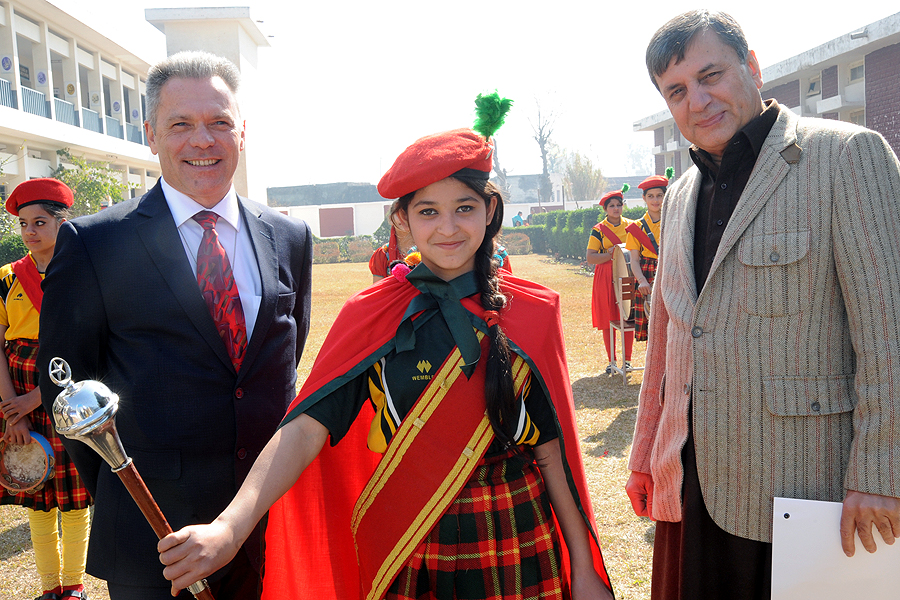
United States and Pakistan Launch the Pakistan Reading Project